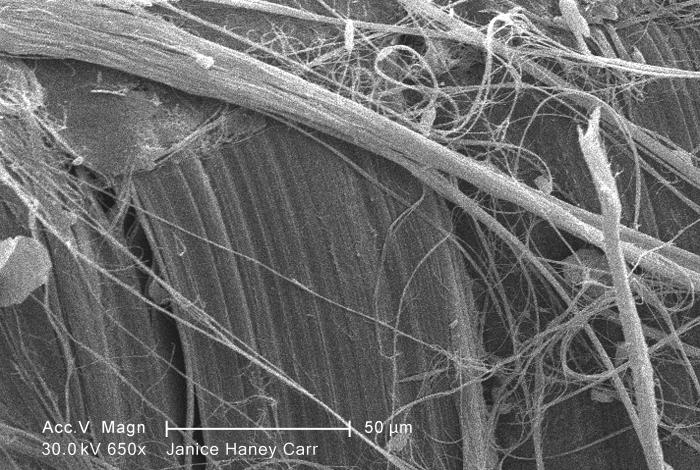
Under a moderate magnification of 650X, this scanning electron micrograph (SEM) revealed some of the microcrystalline ultrastructure exhibited by a piece of raw chrysotile, or white asbestos, which had been excavated from the Lowell Asbestos Mine on Belvidere Mountain, Vermont.